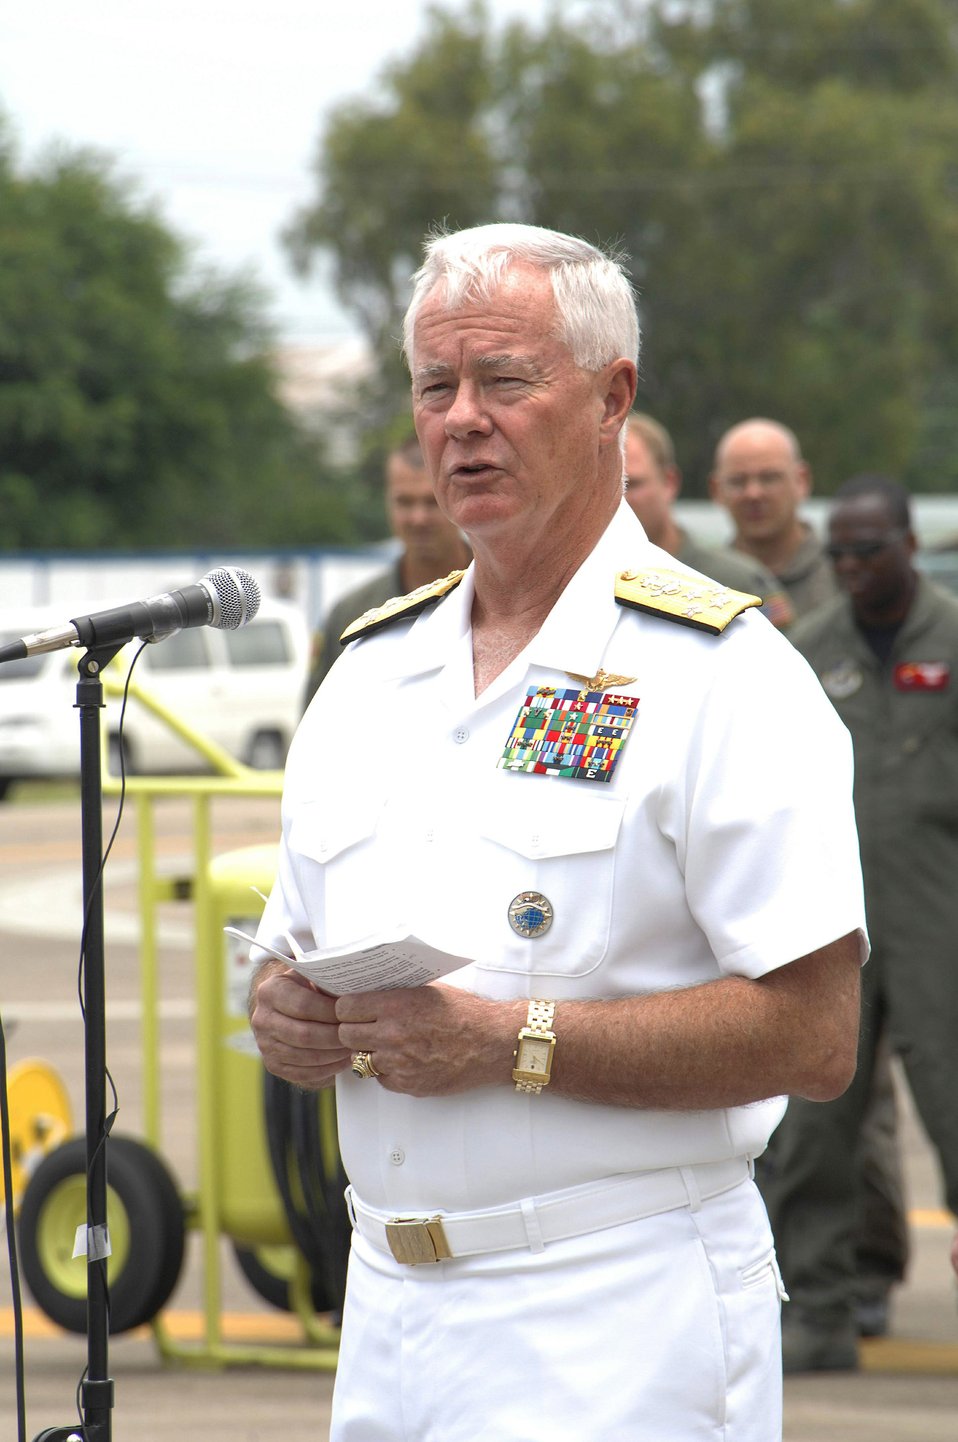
Airmen support Burma relief effort

Navy Adm. Timothy J. Keating briefs media on the supplies being delivered by a C-130 Hercules to victims of Cyclone Nargis in Burma May 12 at Utapao Air Base, Thailand. The C-130 is the first aircraft being flown into the country since permission was granted to assist with relief efforts, which included five pallets of water, mosquito netting and blankets. Admiral Keating is the commander of U.S. Pacific Command from Camp H. M. Smith, Hawaii.